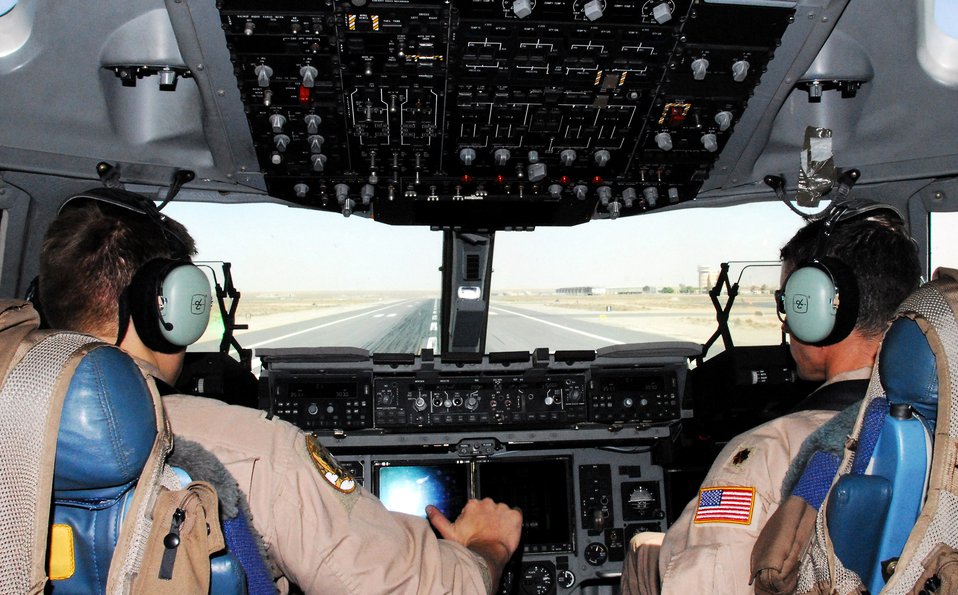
Airpower summary for June 5, 2007

C-17 Globemaster III pilots 1st Lt. Brad Lane (left) and Maj. Scott Berndt prepare to depart from a forward operating location June 6 carrying passengers to another location in the area of responsibility. Coalition C-17s and C-130 Hercules moved 1,960 passengers and delivered more than 1.4 million pounds of cargo June 5. The two pilots are assigned to the 816 Expeditionary Airlift Squadron.